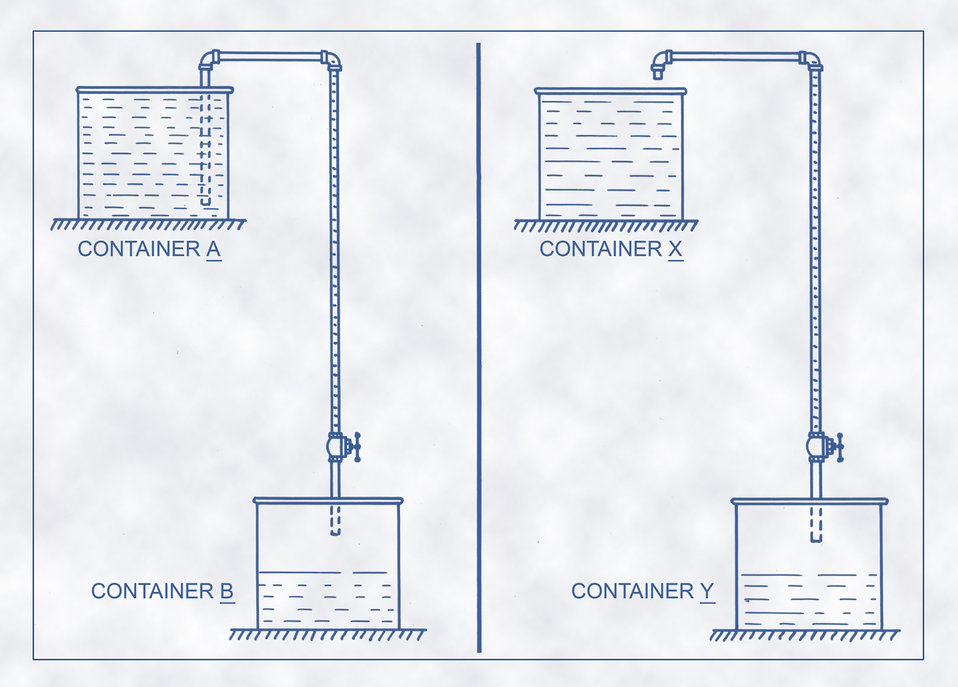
This 1936 diagram, which had been digitally enhanced and colorized, illustrated the means by which polluted water might be transferred from an elevated container, at one level, to a container on a lower level, and the method of preventing such contamination.